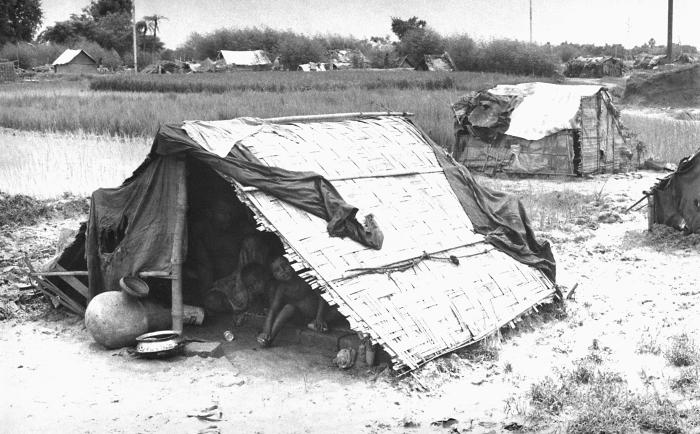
This image depicted a temporary makeshift dwelling that was inhabited by a displaced family; an adult male and two children may be seen in the entrance of the home. Though this image was taken in the 1970s, Bangladesh was, and still is one of the poorest countries in the world. This image was part of a series provided by Dr. Stan Foster, and captured by Pierre Claquin, M.D., B.A.C., who at the time was a member of the World Health Organization's Smallpox Eradication Program. It was part of a series photographed by former E.I.S. officer, Stanley O. Foster M.D., M.P.H., and was one of a series entitled 'The Story of One Smallpox Jeep', which depicted the travails faced by the jeep, and its occupants of public health practitioners, as they road through the Bangladesh countryside in an attempt to eradicate smallpox from the country.